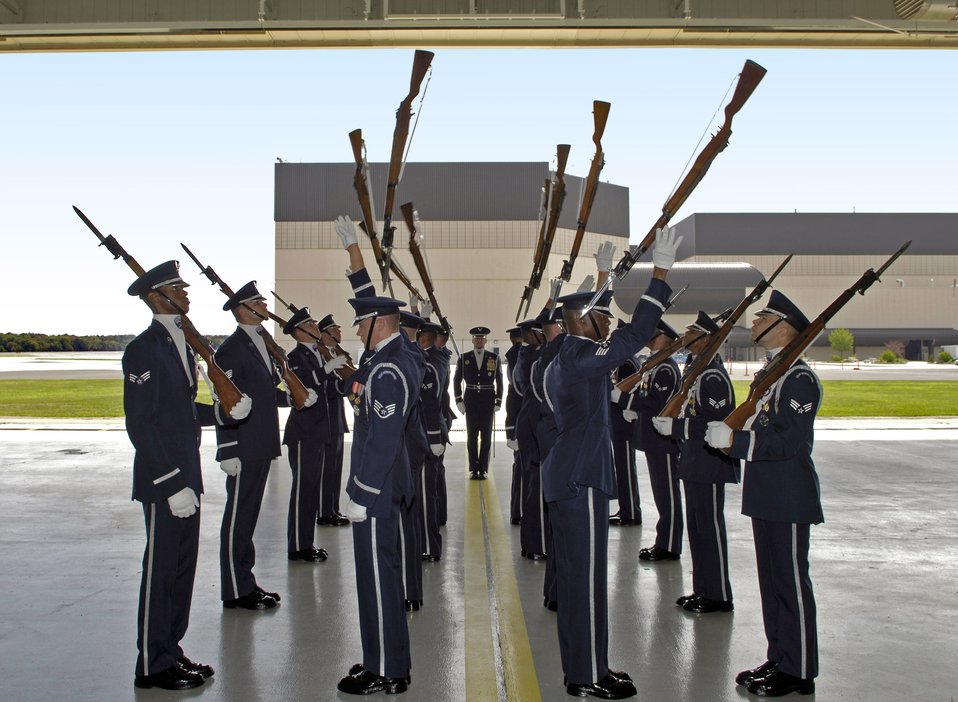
They make it look easy

The Air Force Honor Guard from Bolling Air Force Base, D.C., performs for a crowd at a recruiting event Aug. 8 on McGuire Air Force Base, N.J.